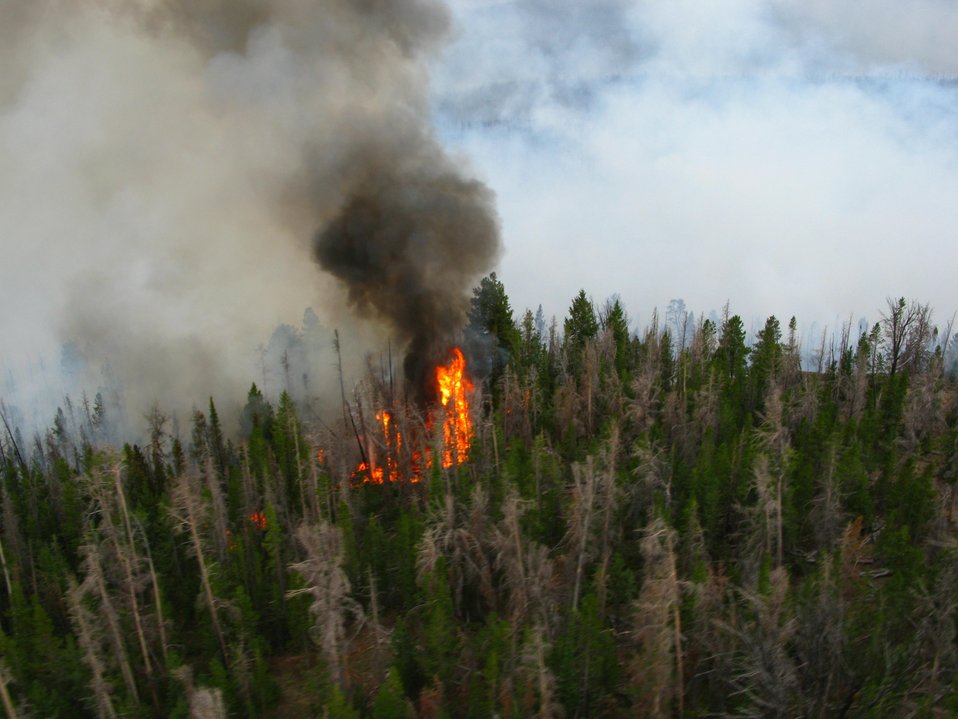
The Lodgepole Fire in the Salmon-Challis National Forest near Challis, ID began on Jul. 20, 2013 by lightning has consumed approximately 13,700 acres and is approximately 15% contained.